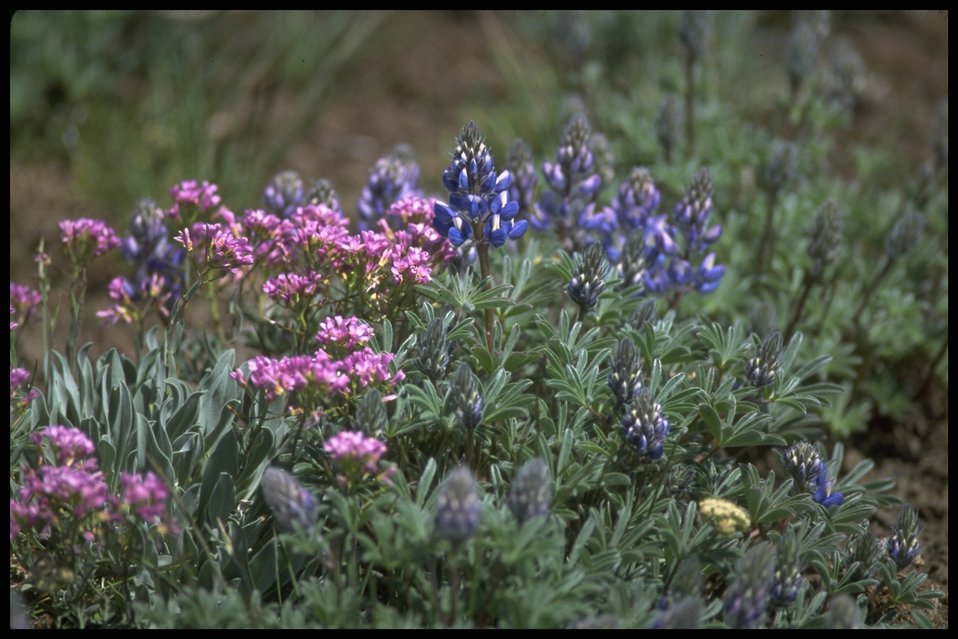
Medium shot of Lupine and Dagger Pods, Lakeview District.